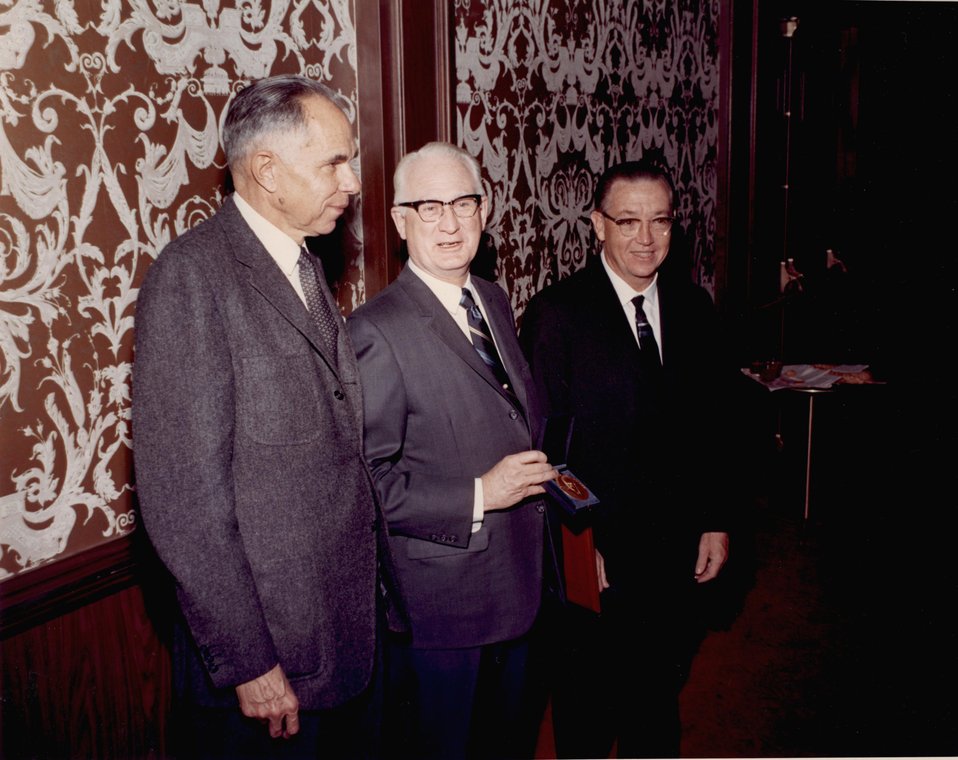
Fermi Award. Recipient: Walter Zinn. Date: Dec 2, 1970.